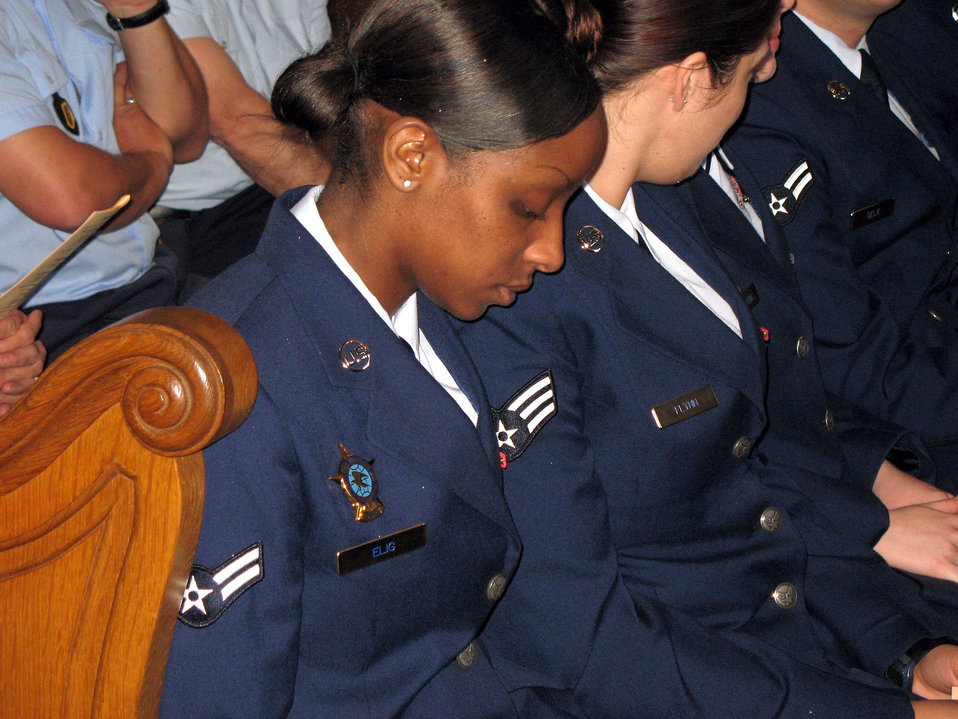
Spangdahlem Airmen take part in World Day of Peace

Airman 1st Class Erika Elig observes the World Day of Peace in a cathedral in Trier, Germany. Every year, the festival - dedicated to prayer and services focused on healing the rifts between cultures - is held in Germany's oldest city.